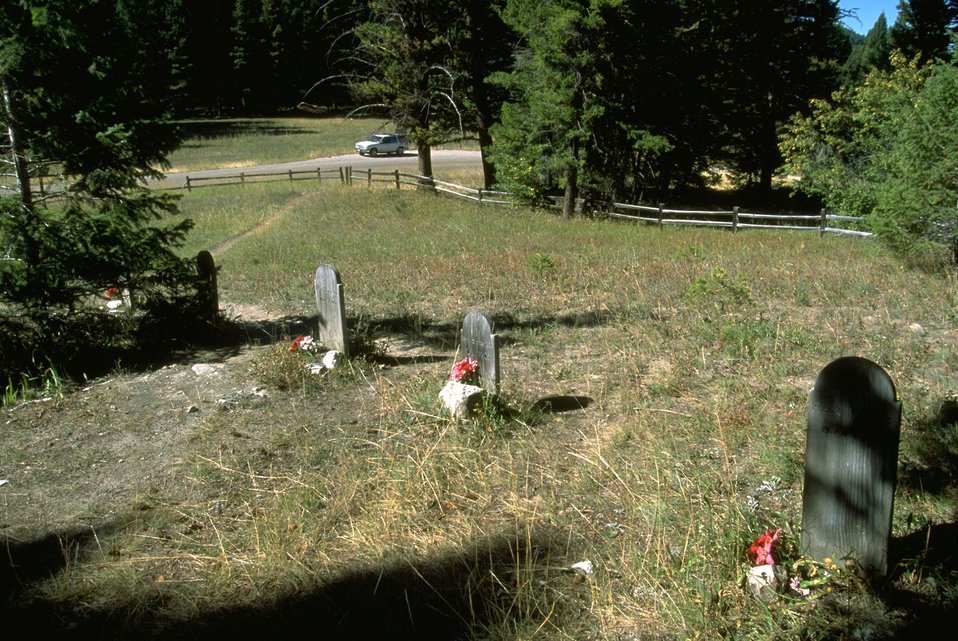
Grave markers at Sand Park cemetery along Garnet Back Country Byway